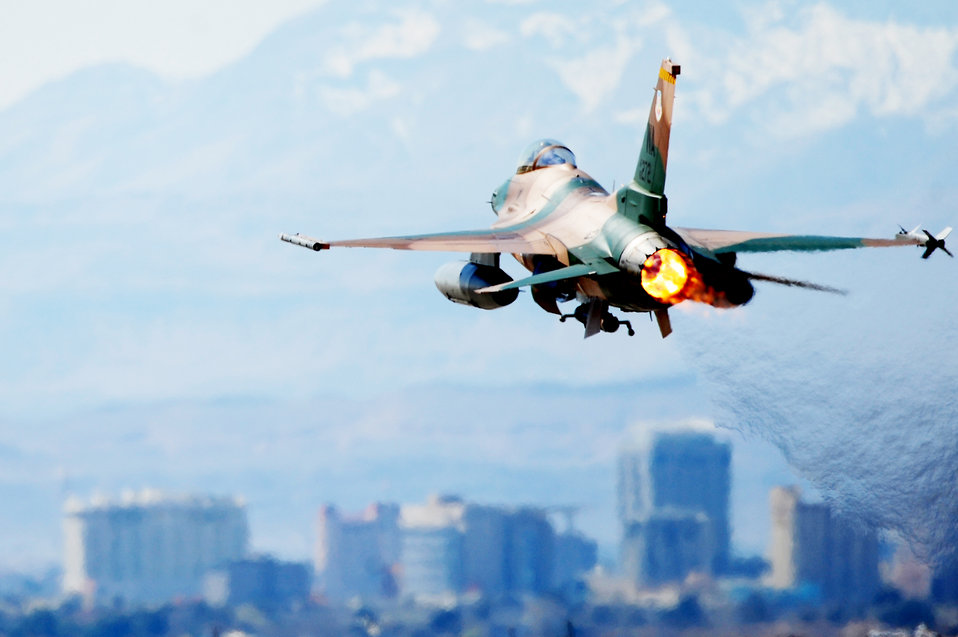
A burst of power

An F-16 Aggressor takes off March 3, 2010, during a Red Flag Exercise at Nellis Air Force Base, Nev. Red Flag is a realistic combat training exercise involving the air forces of the United States and its allies. The exercise is conducted on the 15,000-square-mile Nevada Test and Training Range, north of Las Vegas.